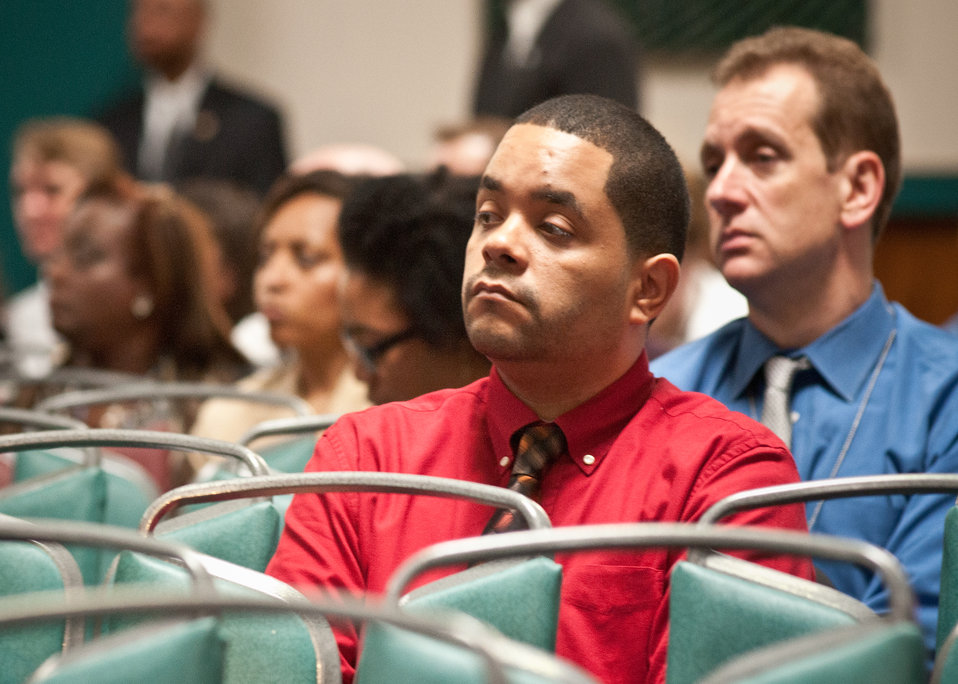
Agriculture Secretary Tom Vilsack offered U.S. Department of Agriculture (USDA) employees the opportunity to ask questions about the Blueprint for Stronger Service Initiative and hear directly from the Secretary Vilsack during the Ask The Secretary event held in the South Building Cafeteria, in Washington, D.C., on Wednesday, March 21, 2012, The Blueprint for Stronger Service Initiative aims to build a modern and efficient service organization that is closely timed with technological innovations - and better suited to respond to 21st century agricultural challenges.